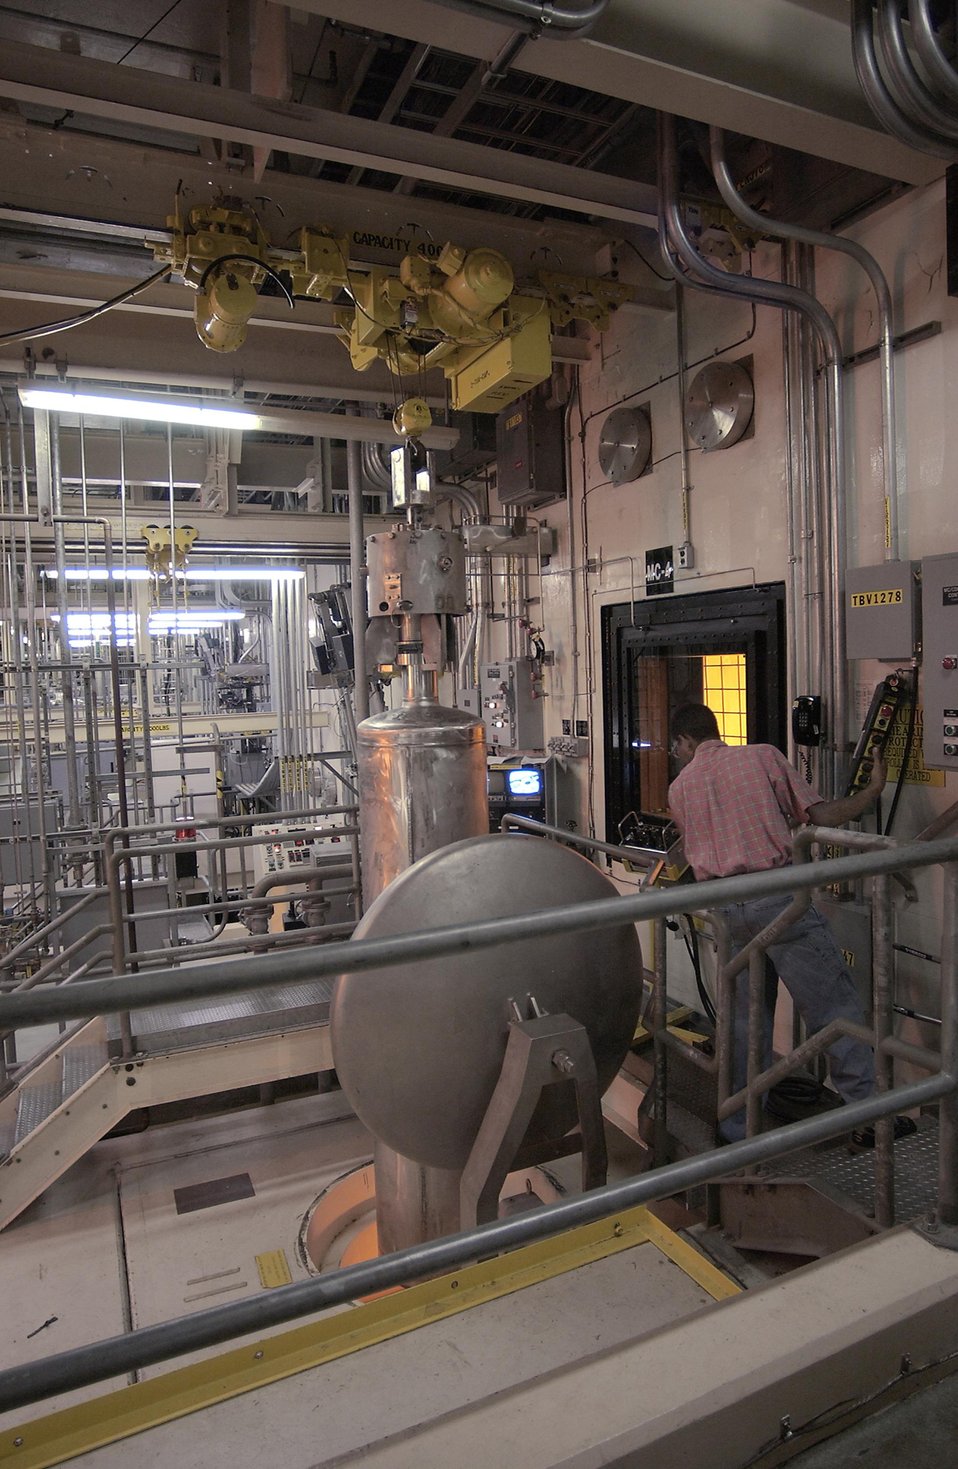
AN EMPTY CANISTER BEING LOWERED INTO POSITION TO MAKE ITS WAY THROUGH THE VITRIFICATION PROCESS.

SAVANNAH RIVER SITE'S DWPF IS DESIGNED TO CONVERT HIGH LEVEL LIQUID DEFENSE NUCLEAR WASTE INTO BOROSILICATE GLASS, A STABLE FORM SUITABLE FOR STORAGE, TRANSPORTATION AND REPOSITORY STORAGE. THE WASTE TO GLASS PROCESS IS KNOWN AS VITRIFICATION. THE RADIOACTIVE WASTE IS FUSED WITH SAND AT A TEMPERATURE OF 2,000 DEGREES IN A LARGE CRANE OPERATED STEEL MIXER, POURED INTO STAINLESS STEEL CANISTERS TO HARDEN INTO A BLACK GLASS. THE SEALED CANISTERS ARE STORED VERTICALLY IN SLOTS ON A CONCRETE SLAB UNTIL THEY CAN BE MOVED TO A SAFE REPOSITORY.